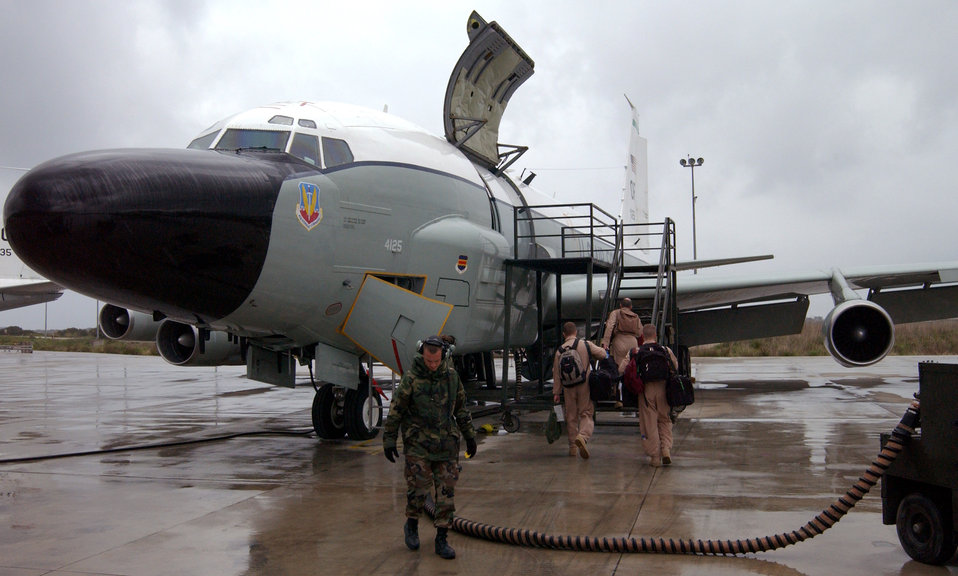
Rivet Joint

OPERATION IRAQI FREEDOM -- Members of the 398th Air Expeditionary Group prepare an RC-135 Rivet Joint aircraft for a misison at a forward deployed Operation Iraqi Freedom location.